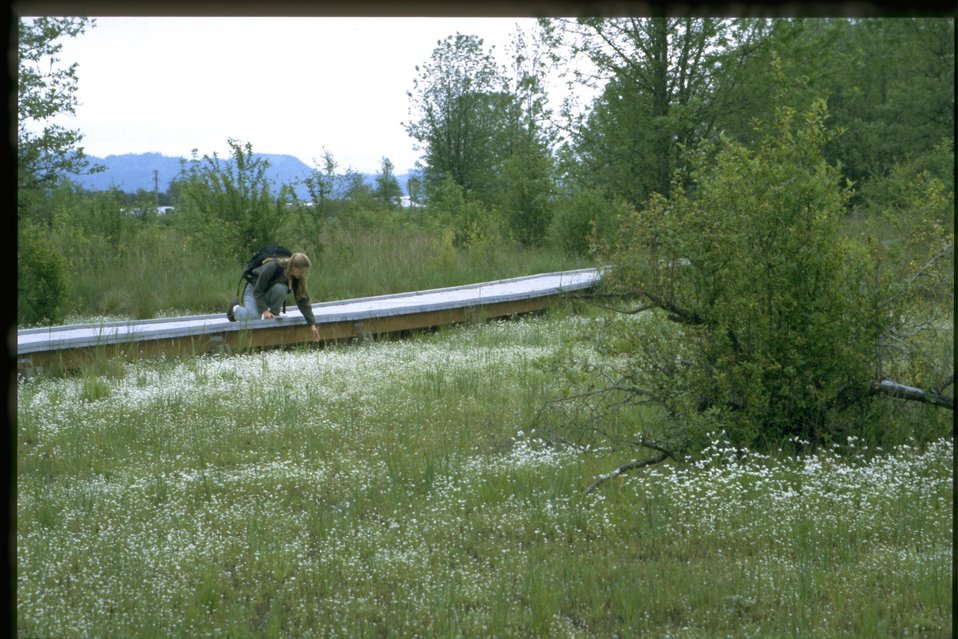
Far shot of Plagiobothrys figurantus.